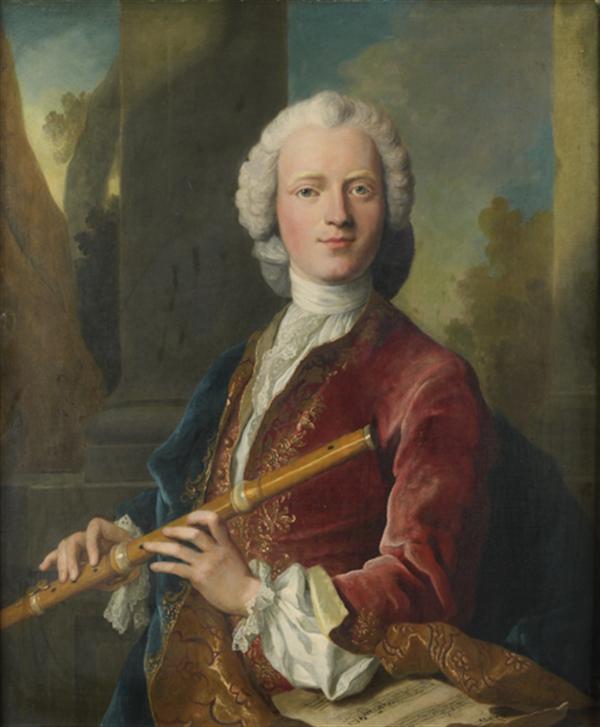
Millot